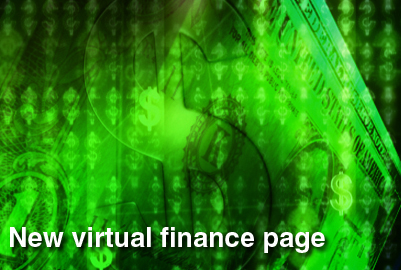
Air Force's new 'virtual Finance' takes customers out of waiting line